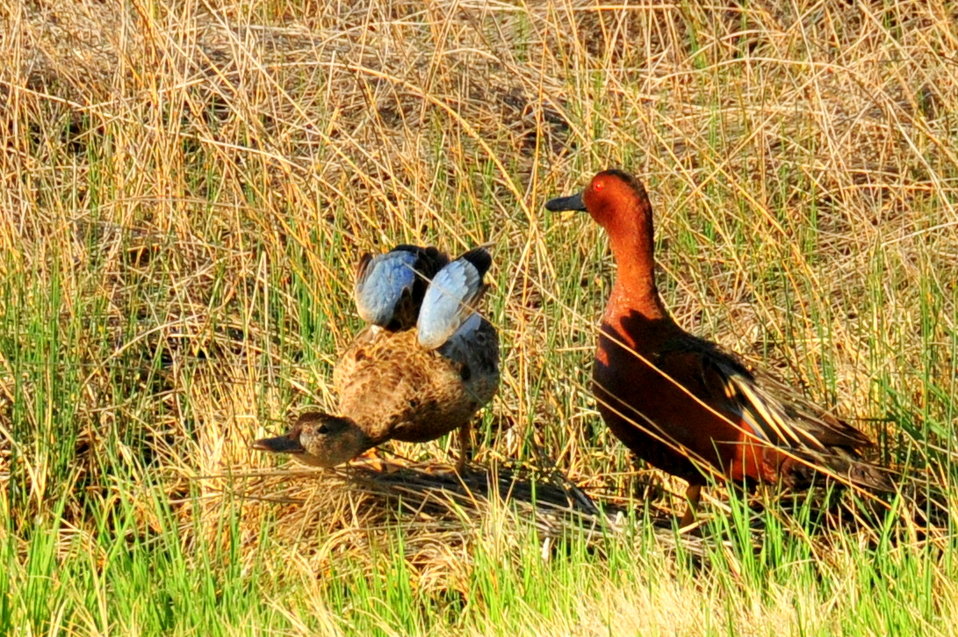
Cinnamon teal pair on Seedskadee NWR 01

A cinnamon teal pair courting on Seedskadee NWR. Head bobbing, bowing, and flight chases were all part of the courtship for this pair. The powder blue wing patches on the hen are clearly visible. A slightly spatulate tip of the bill identifies her as a cinnamon teal as opposed to a hen blue winged teal which looks almost identical in plumage.